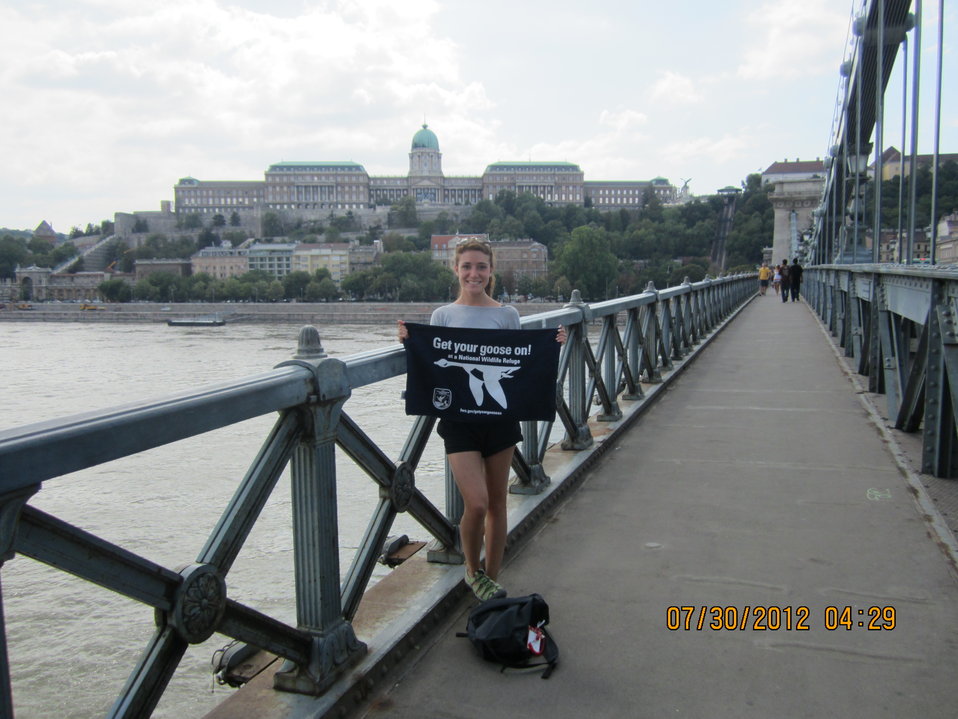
Get Your Goose On! - in France